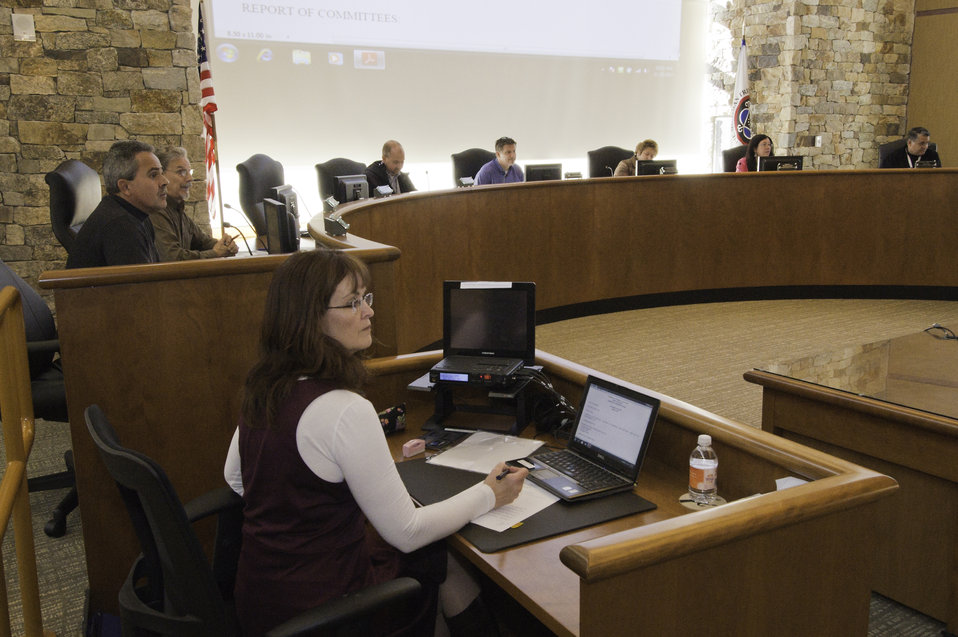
A Mohegan Tribal Council meeting is held at the Mohegan Tribe Community Center and Government Building in Uncasville, CT on Nov. 20, 2013. A U.S. Department of Agriculture (USDA) Rural Development (RD) Community Facility Loan was provided to the Mohegan Tribe for the construction of the Mohegan Tribe Community Center and Government Building in Uncasville, CT. USDA’s RD Community Facilities Programs makes and guarantees loans to develop essential community facilities in rural areas and towns of up to 20,000 in population. Loans and guarantees are available to public entities such as municipalities, counties, parishes, boroughs, and special-purpose districts, as well as to non-profit corporations and tribal governments. The 160,000 square foot building Center hosts an exhibit celebrating federal recognition, history of Mohegan Chiefs, a new Library and Archives space, new Arts and Crafts room, a new gymnasium, and a new community room to enjoy food and family. The Center will continue the Tribe’s plan for growth and meeting the needs of its members.